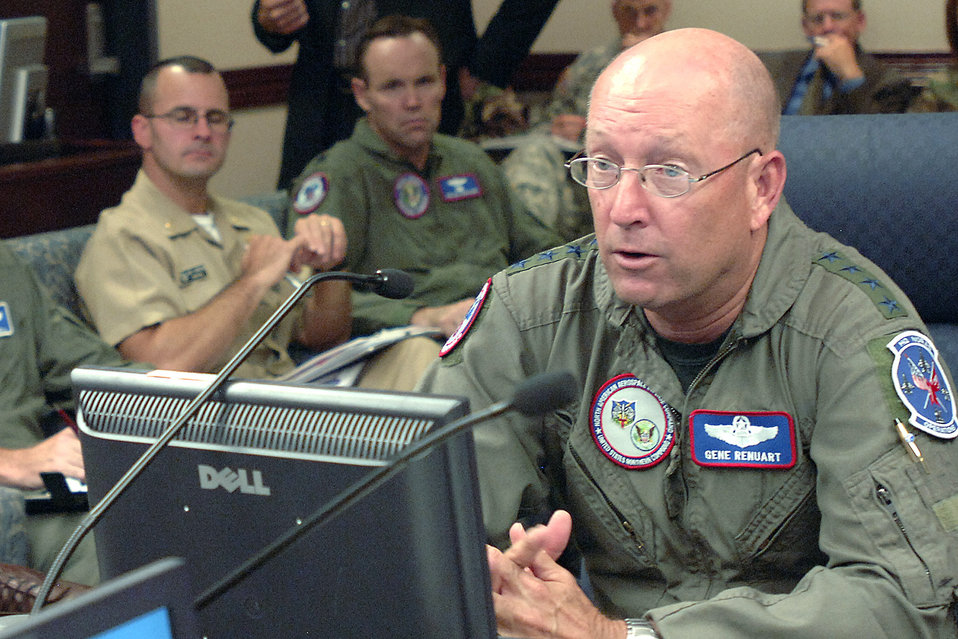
Commands meet challenges of multiple, diverse missions

Gen. Victor E. Renuart Jr. discusses the progress of several ongoing missions during the commander's update briefing at North American Aerospace Defense Command and U.S. Northern Command headquarters Aug. 20 at Peterson Air Force Base, Colo. General Renuart is the commander of NORAD and USNORTHCOM. In August, the two military commands have supported the space shuttle launch and landing, recovery efforts at the collapsed bridge in Minneapolis, rescue operations at Utah's Crandall Canyon mine, Russian bomber monitoring, and Hurricane Dean response preparations.